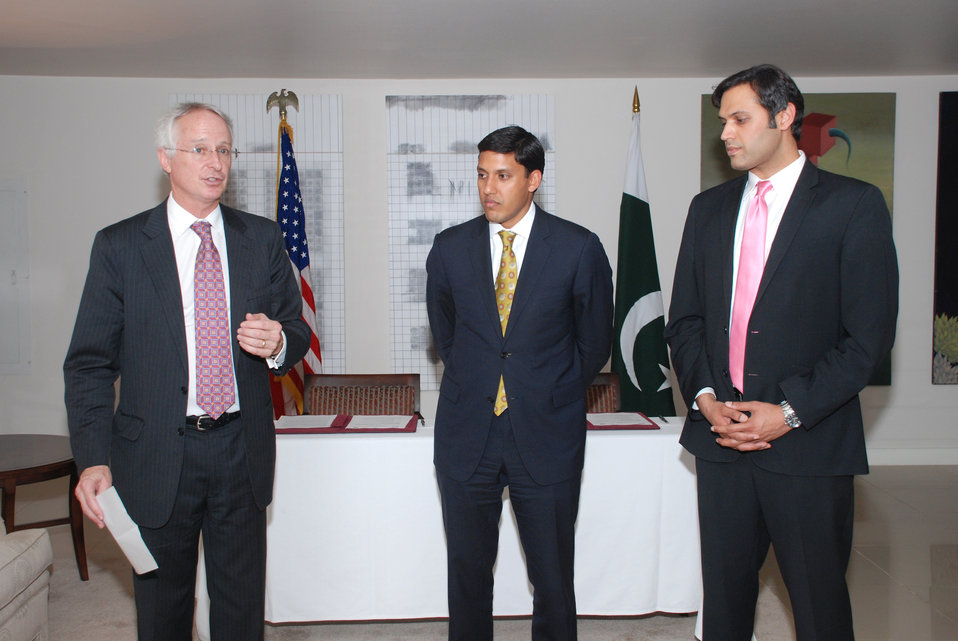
MoU Signing Ceremony between USAID and APF at Islamabad on April 18, 2012

Cameron Munter addressing the USAID and APF officials